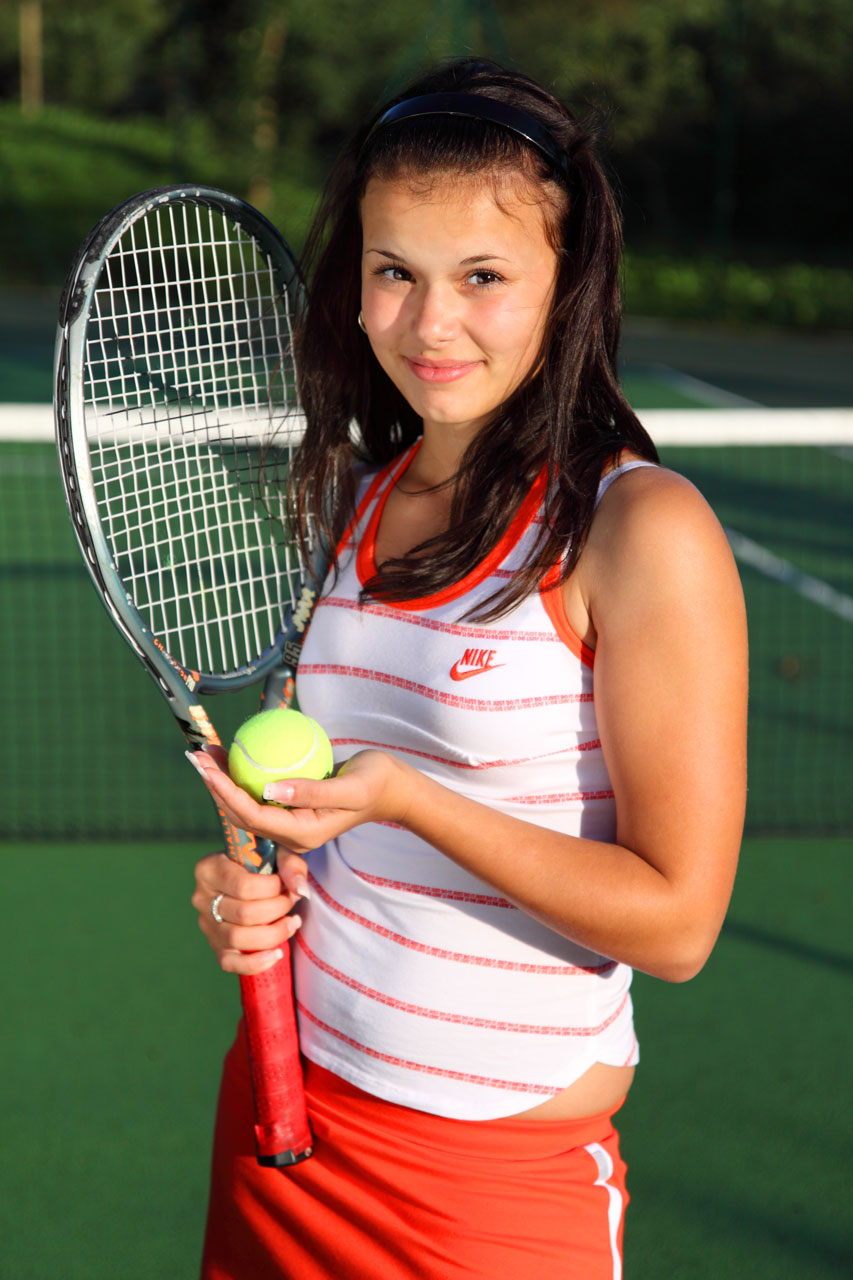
Female tennis player

Young tennis player.